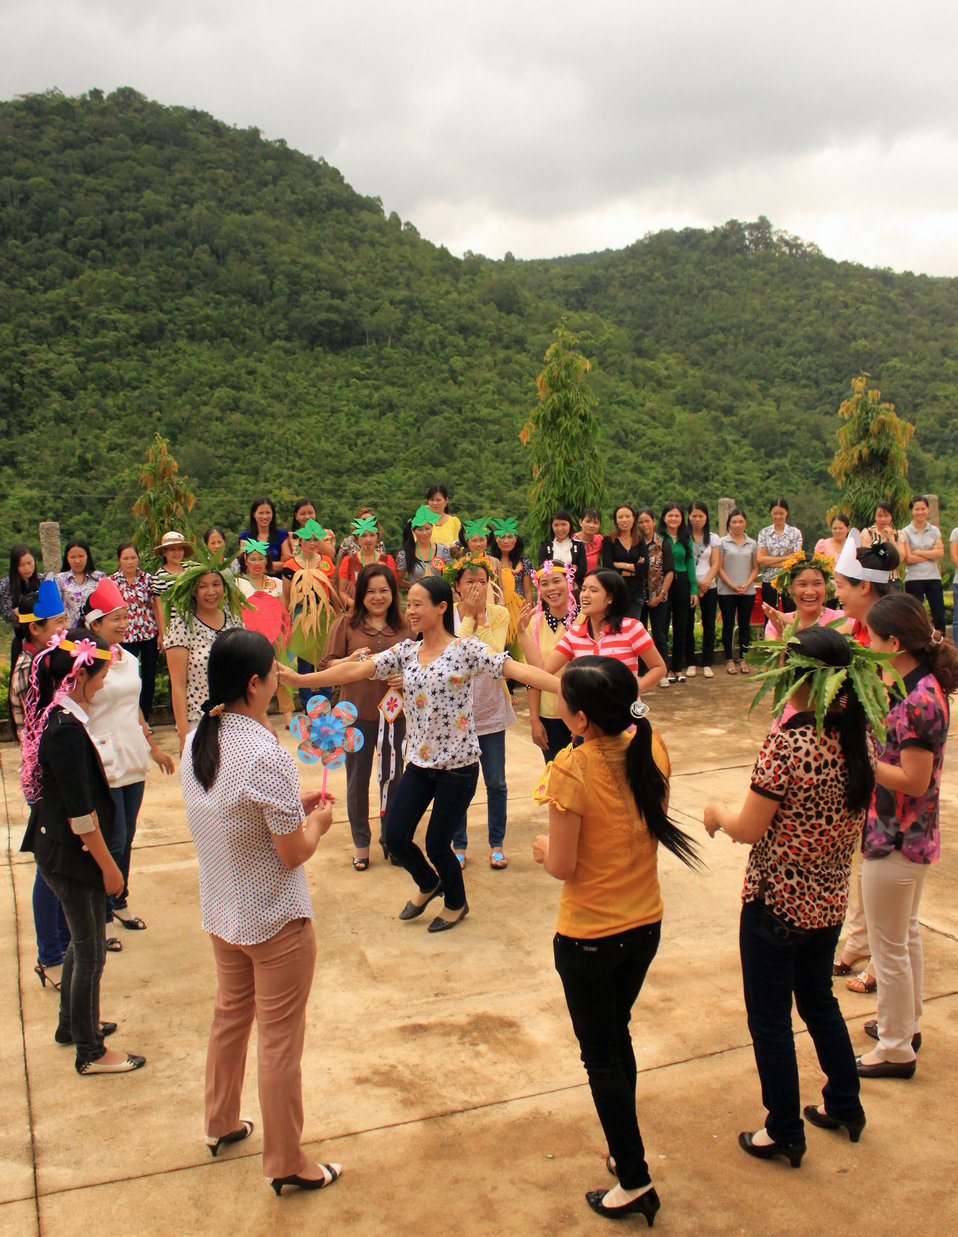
Teachers in Kon Tum practice what they learned from USAID-funded intensive training courses